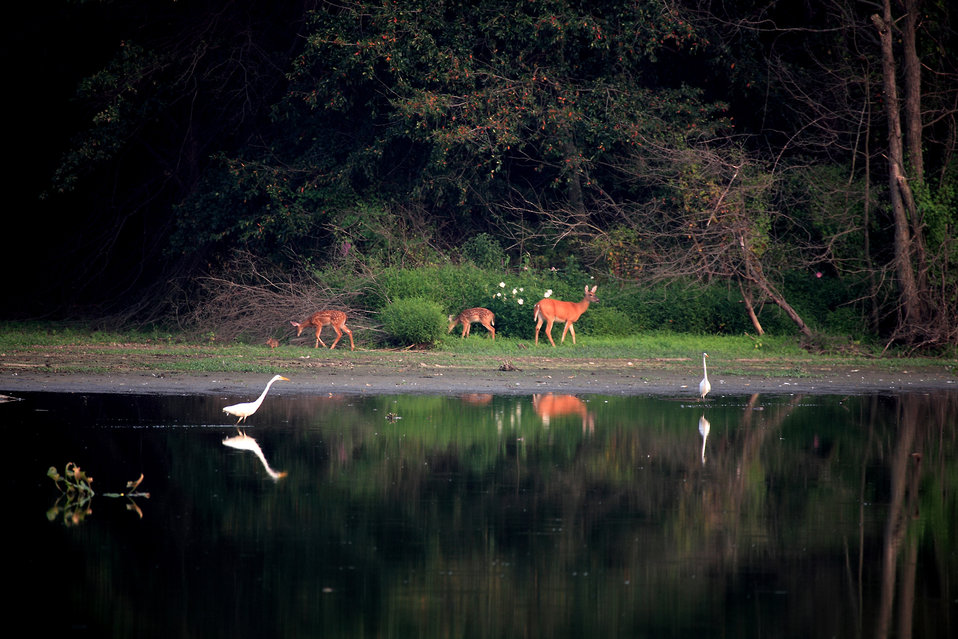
Deer and egrets at John Heinz National Wildlife Refuge in Philadelphia, Pennsylvania.